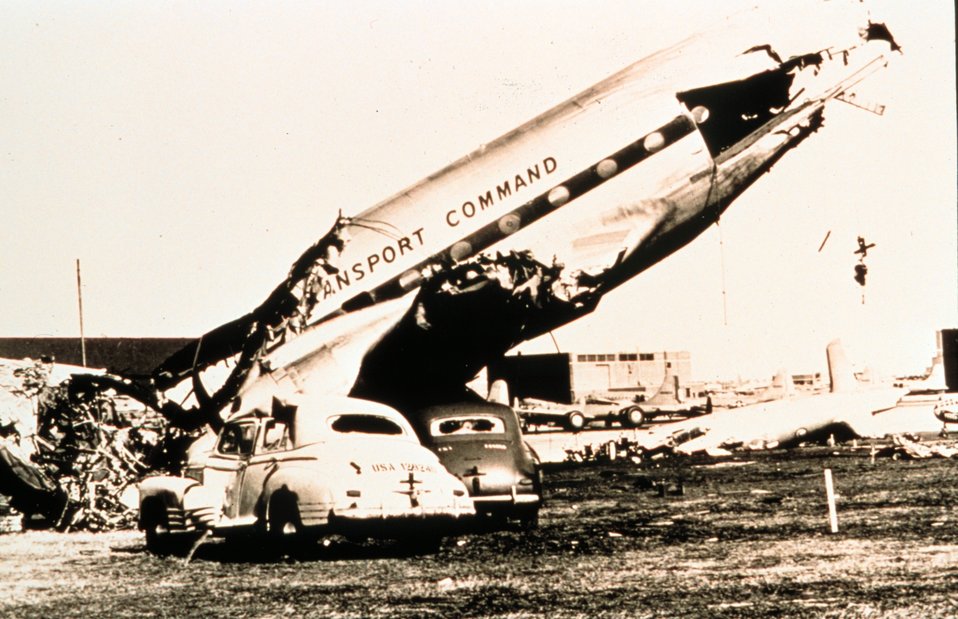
Remains of a large military aircraft after passage of tornado Tornado of March 25, 1948 at Tinker Air Force Base, Oklahoma The coming of this storm resulted in the first broadcast tornado warning